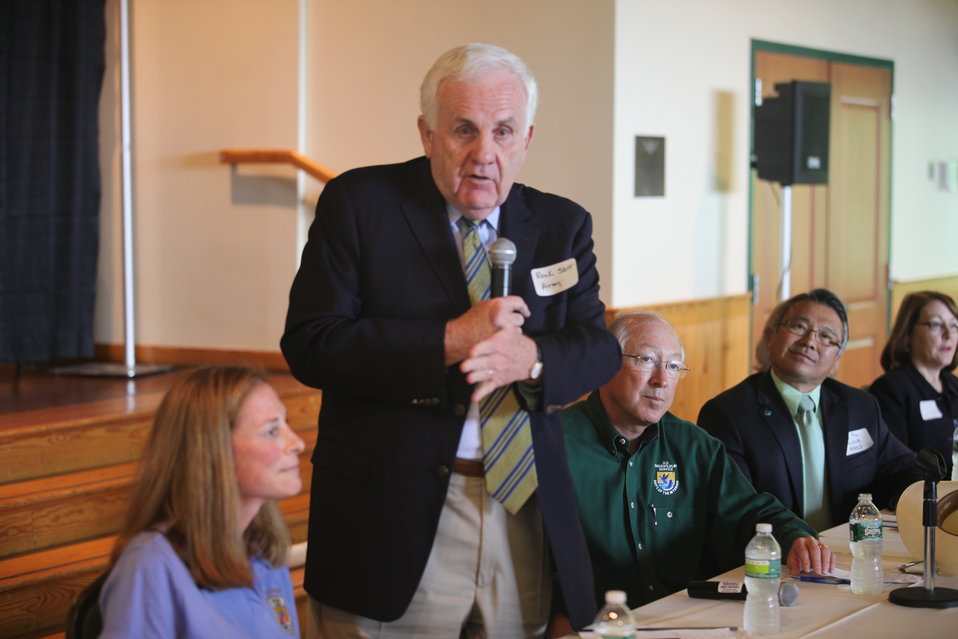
Rock Salt Deputy Assistant Secretary for Army Corps of Engineers

Principal Assistant Secretary of the Army (Corps of Engineers) Rock Salt speaks at the event.